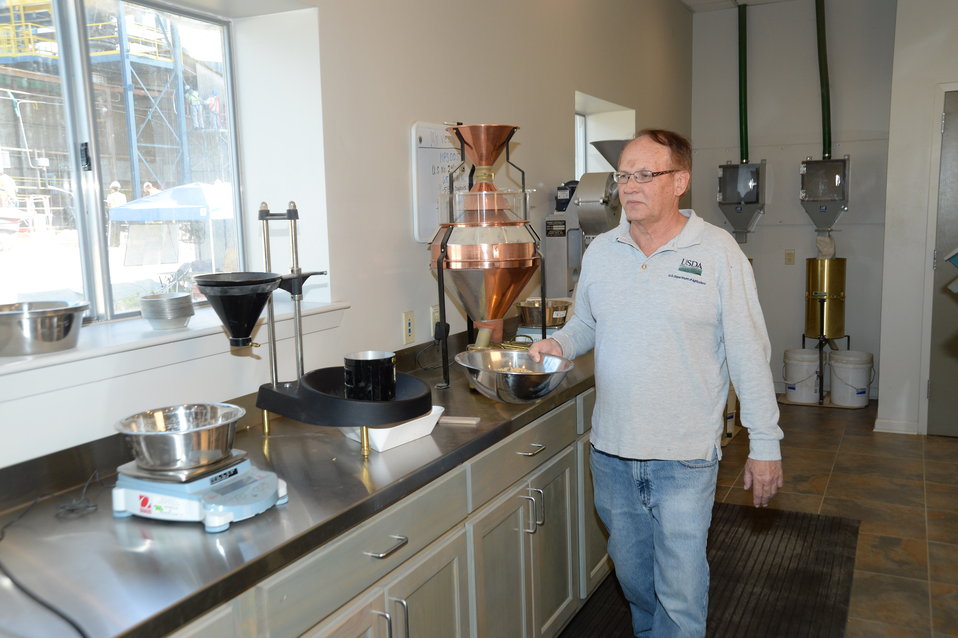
U.S. Department of Agriculture (USDA) Grain Inspection, Packers and Stockyards Administration (GIPSA) Federal Grain Inspection Service (FGIS) employee tests U.S. grain ready for export near the Port of New Orleans in New Orleans, LA on Tuesday, Nov. 19, 2013.